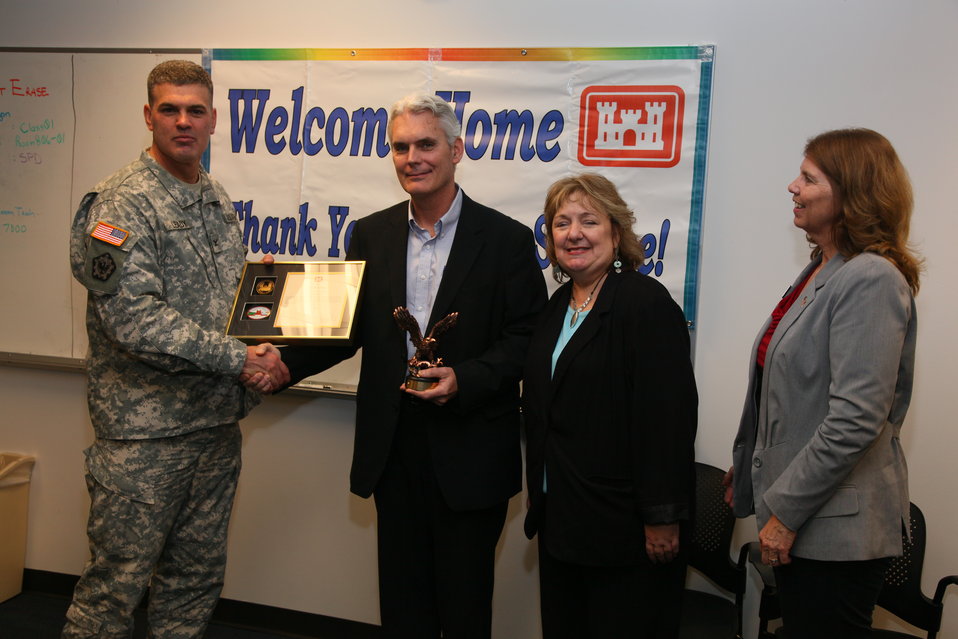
Sacramento District welcomes home Afghanistan volunteers

Sacramento District attorney, Robert Scharf, receives an award from district commander, Col. Bill Leady, for his service in Afghanistan at a welcome-home ceremony in Sacramento, Calif., Jan. 13, 2012. Five district employees were honored for recent Overseas Contingency Operations service at the event. In 2011 alone, the district saw 27 employees volunteer for service in Overseas Contingency Operations.